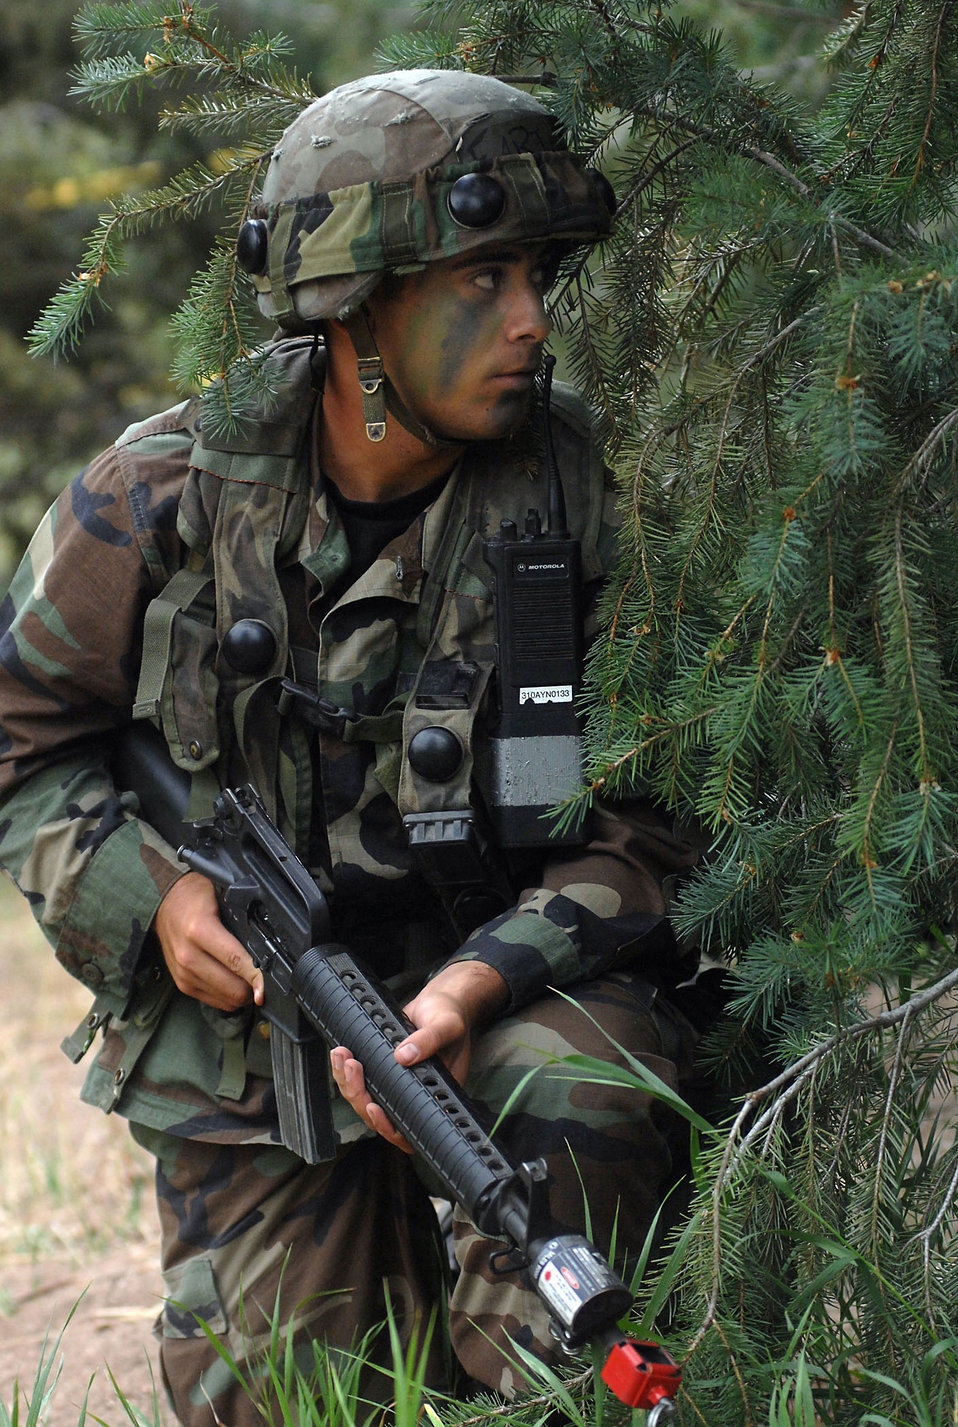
Global Engagement teaches leadership, base deployment

Cadet 3rd Class Farino Salvatore scans for opposition forces during the Global Engagement course July 10 at the U.S. Air Force Academy in Colorado. The purpose of Global Engagement is to lay the foundation for Air Force Academy Cadets of attitudes, knowledge and skills necessary to lead, fight, and win in a dynamic and diverse global environment.